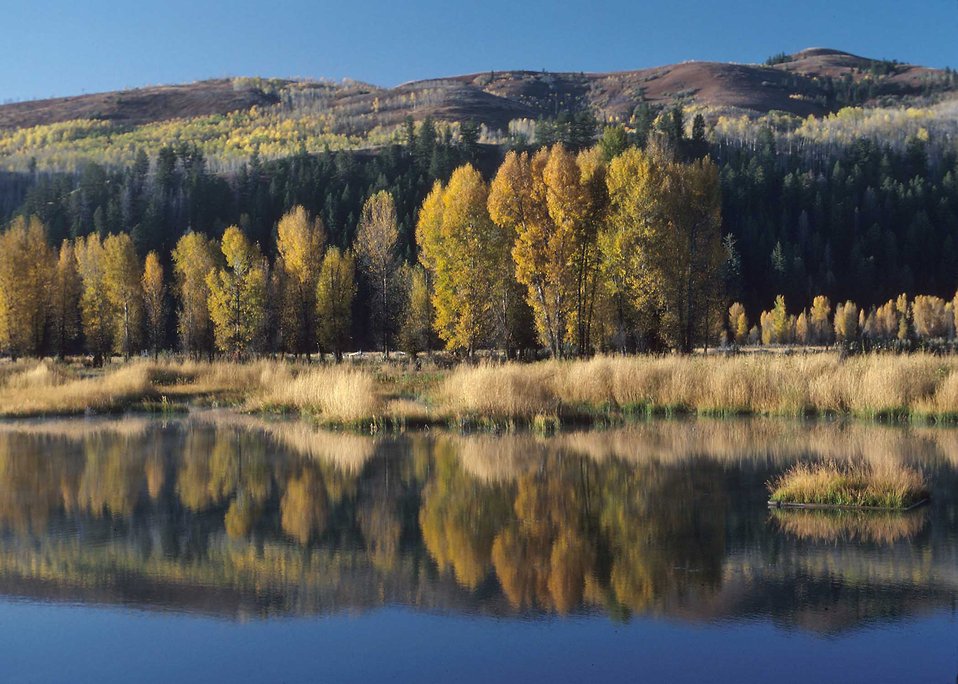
This restored wetland near Jackson, Wyoming will provide good habitat for fish and other wildlife.